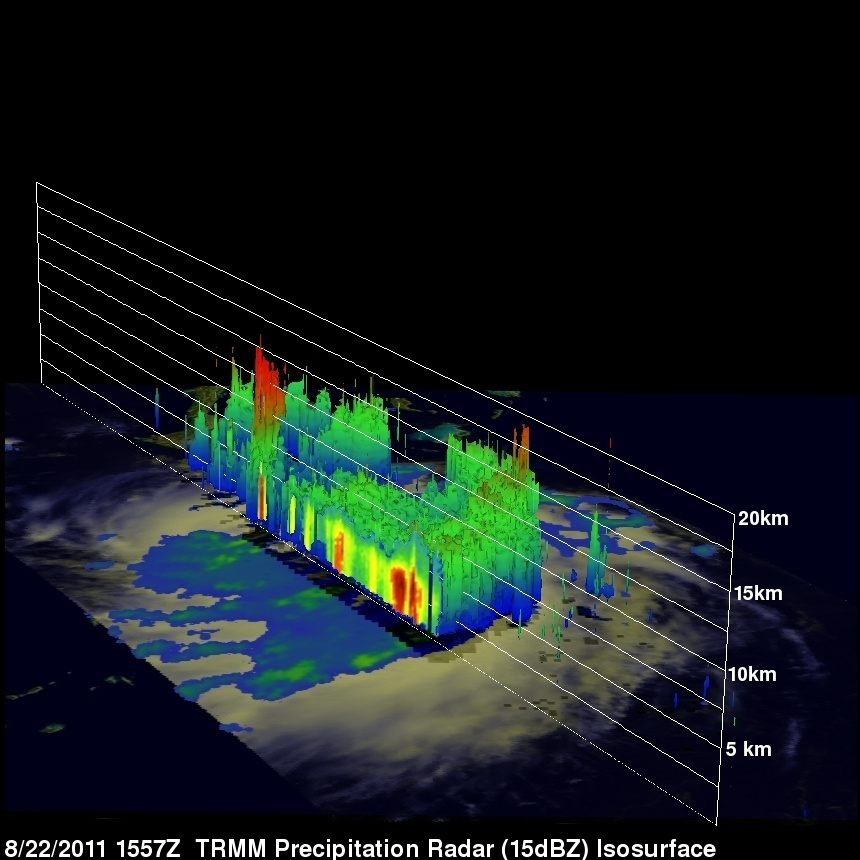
National Aeronautics and Space Administration, (NASA): Hurricanes/Tropical Cyclones